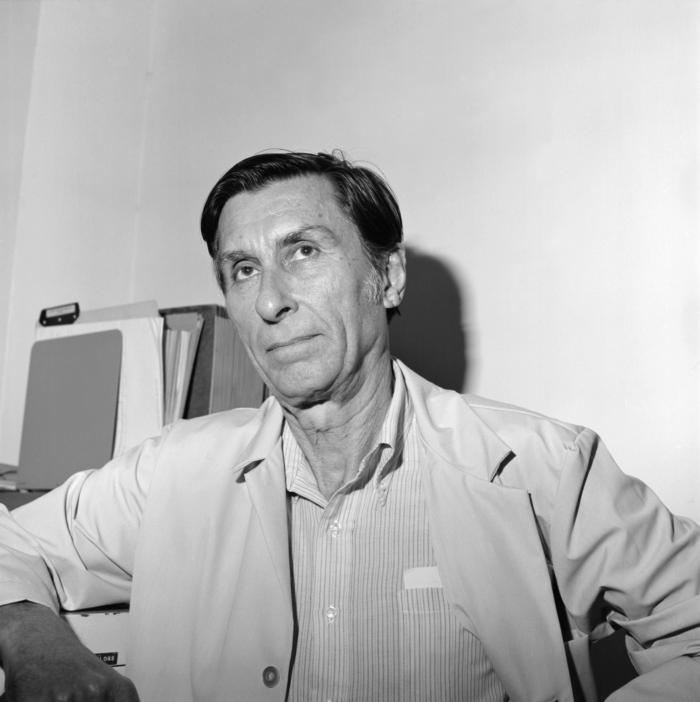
This photograph depicts microbiologist, and former director of Centers for Disease Control's Laboratory Division, Dr. Charles C. Shepard. It was through the diligent efforts of doctors Sheppard, and cohort microbiologist Joseph McDade, which lead to the 1977 discovery of the initially illusive bacterium Legionella pneumophila, the etiologic agent that causes 'Legionnaires' disease'.